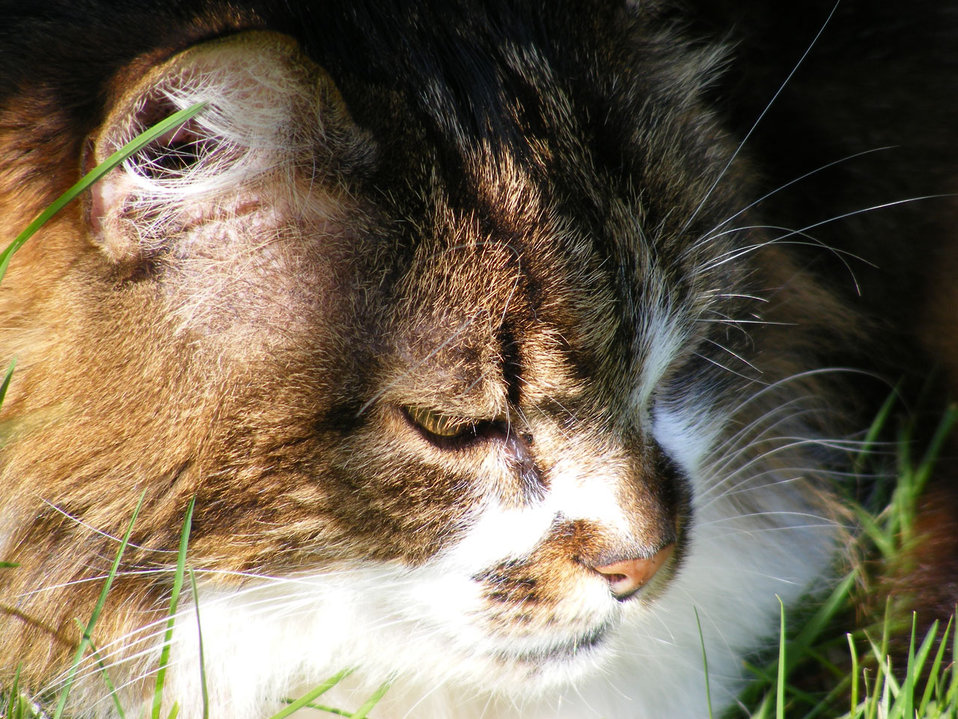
Idle sox

Sox in her usual mode.